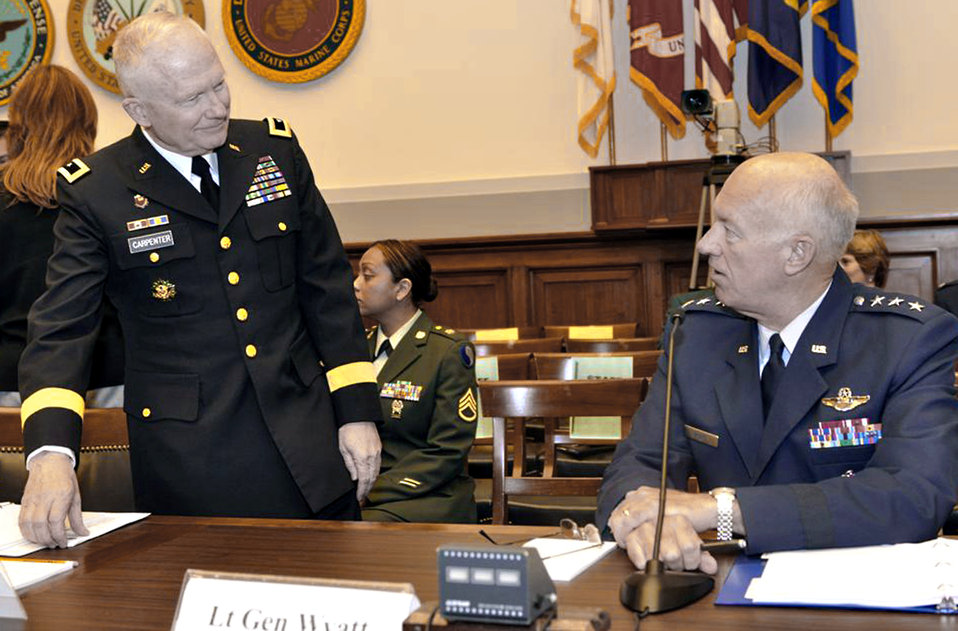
Better-equipped National Guard still faces critical shortages

Army Maj. Gen. Raymond W. Carpenter and Lt. Gen. Harry M. Wyatt III prepare to testify before the House Armed Services Committee's air and land forces subcommittee May 5 in Washington, D.C. General Carpenter is the acting deputy director of the Army National Guard, and General Wyatt is the director of the Air National Guard.